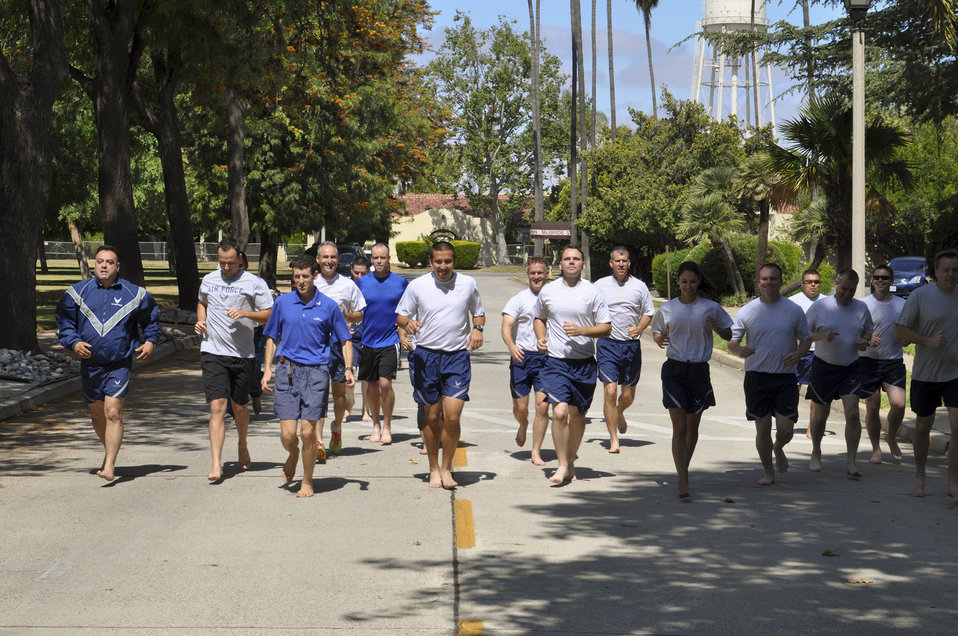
March FITT running program

A group of Airmen try barefoot running Dr. Mark Cucuzzella during a running clinic June 12, 2011, at March Air Reserve Base, Calif. The clinic was a joint effort between the 452nd Air Mobility Wing and the March Fitness and Inspiration Through Teamwork organization.